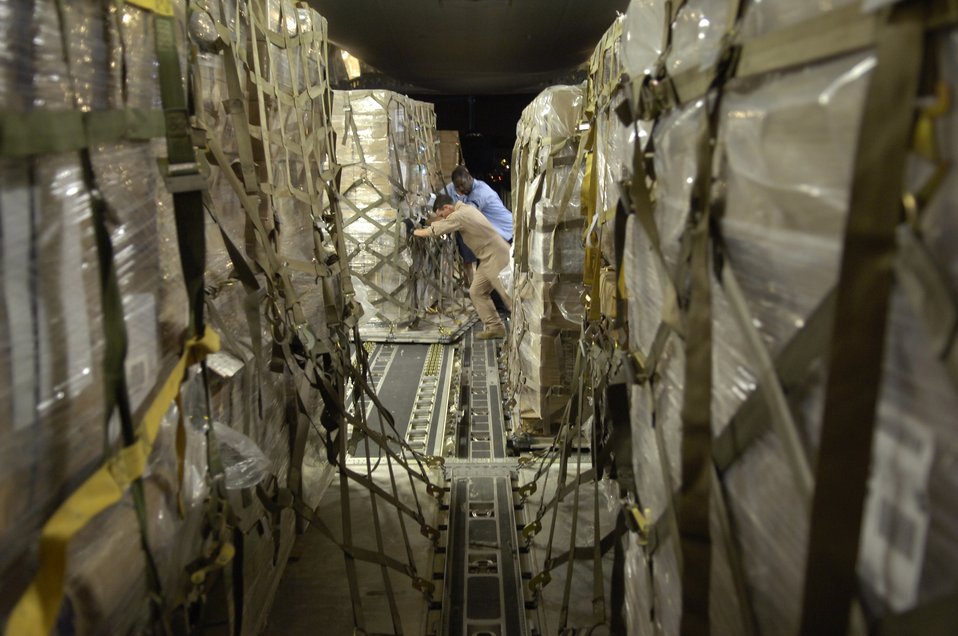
Supplies bound for Cyprus

Crewmembers load pallets onto a C-17 Globemaster III in Southwest Asia for transport to Cyprus on July 22. C-17 crews from the 816th Expeditionary Airlift Squadron are filling their cabins with pallets of supplies such as water, Meals, Ready to Eat and cots for the American citizens leaving Lebanon. This C-17 transported 17 pallets, about 64,000 pounds, of cargo to Cyprus on this mission.